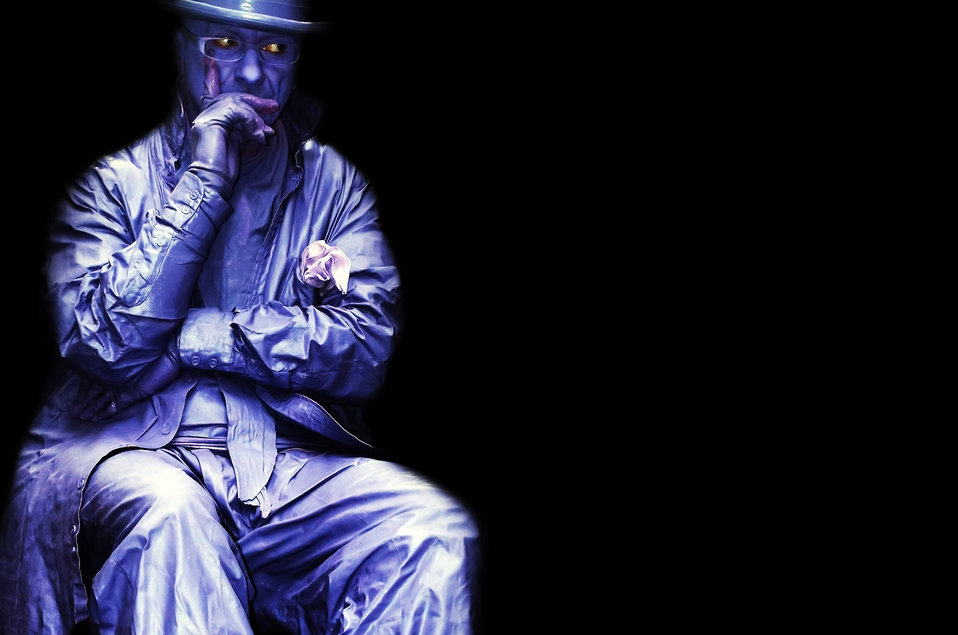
Purple man - background.